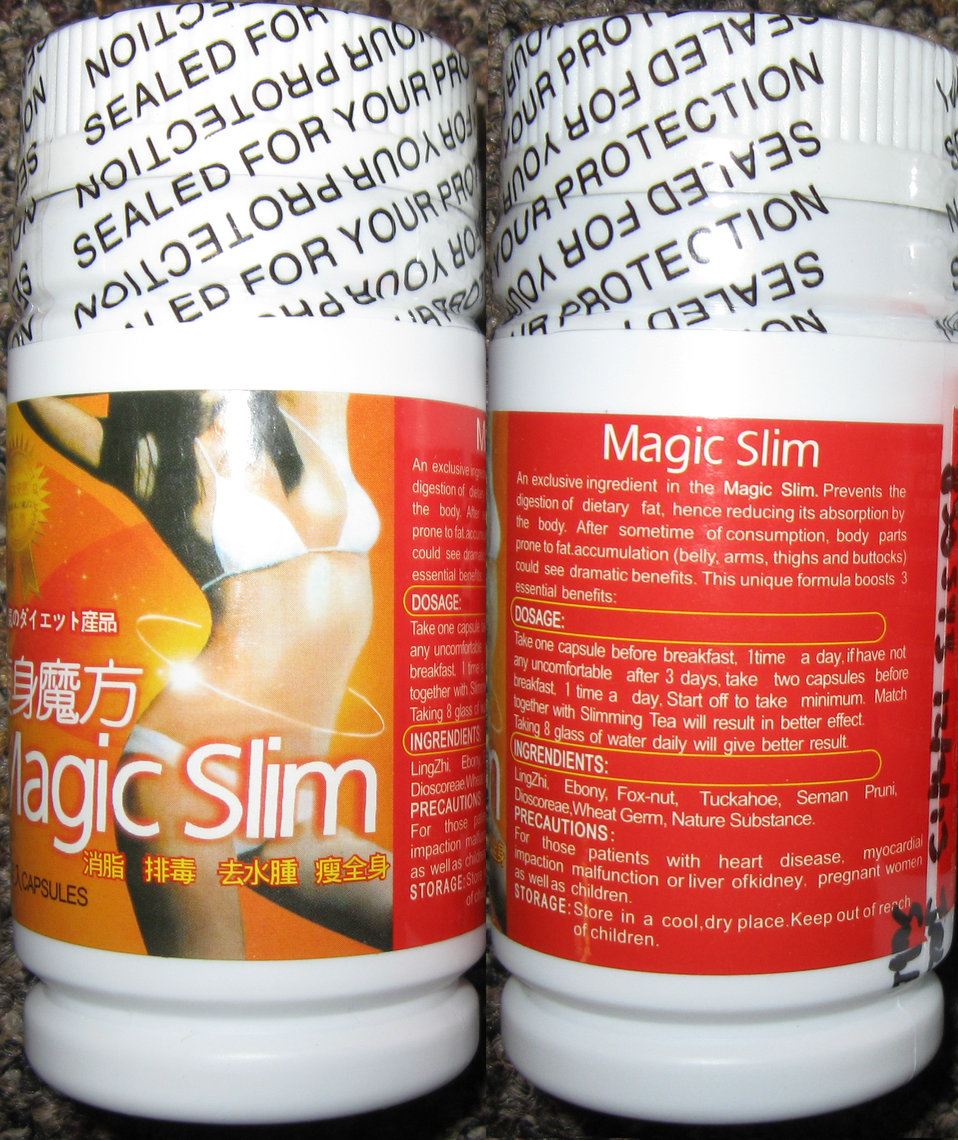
Magic Slim

January 21, 2014 - The FDA is advising consumers not to purchase or use Dream Body Slimming Capsule , a product promoted and sold as a dietary supplement for weight loss. The product was found to contain undeclared sibutramine and phenolphthaleinFor more information, go to www.fda.gov/Drugs/ResourcesForYou/Consumers/BuyingUsingMe...